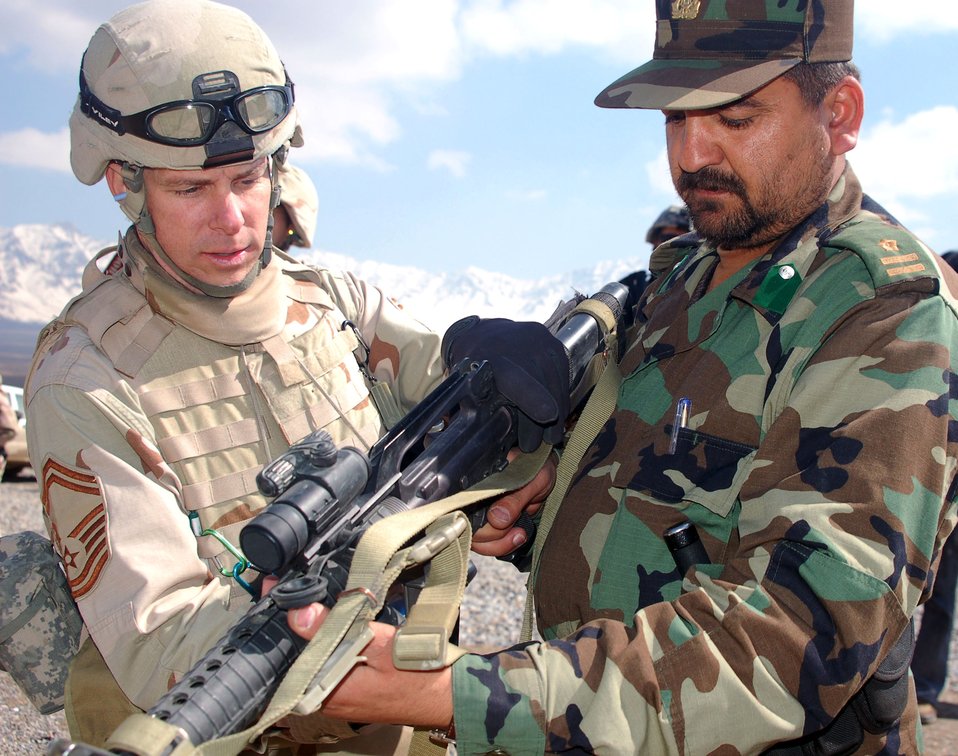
At home on the range

Senior Master Sgt. Robert Spaulding shows Afghan National Army Capt. Abdul Rahman the mechanics of an M-16 March 14. Captain Rahman is 1st Company military police commander. Sergeant Spaulding, the garrison sergeant major for the Training Assistance Group, is deployed from the 4th Logistics Readiness Squadron at Seymour-Johnson Air Force Base, N.C.